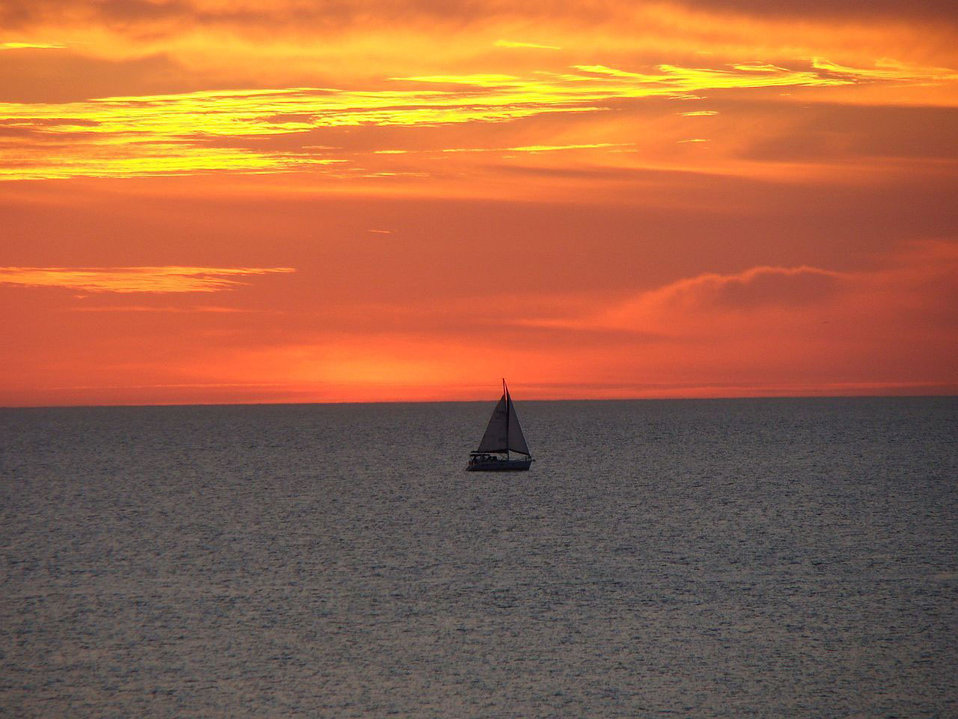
After sunset

Lonely sailboat against sunset background.